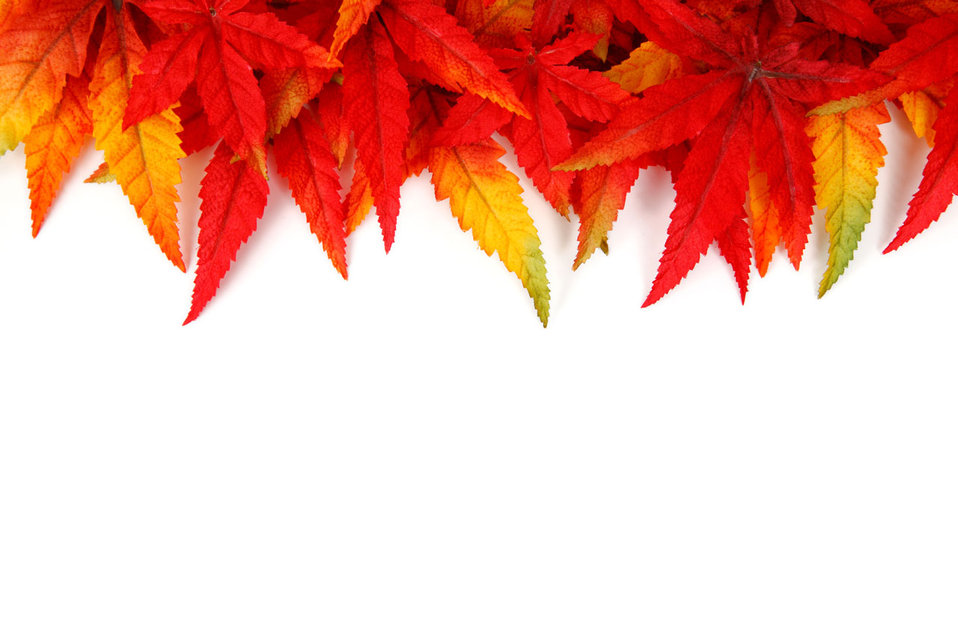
Autumn leaf frame

Colorfut autumn leaf frame on white background.